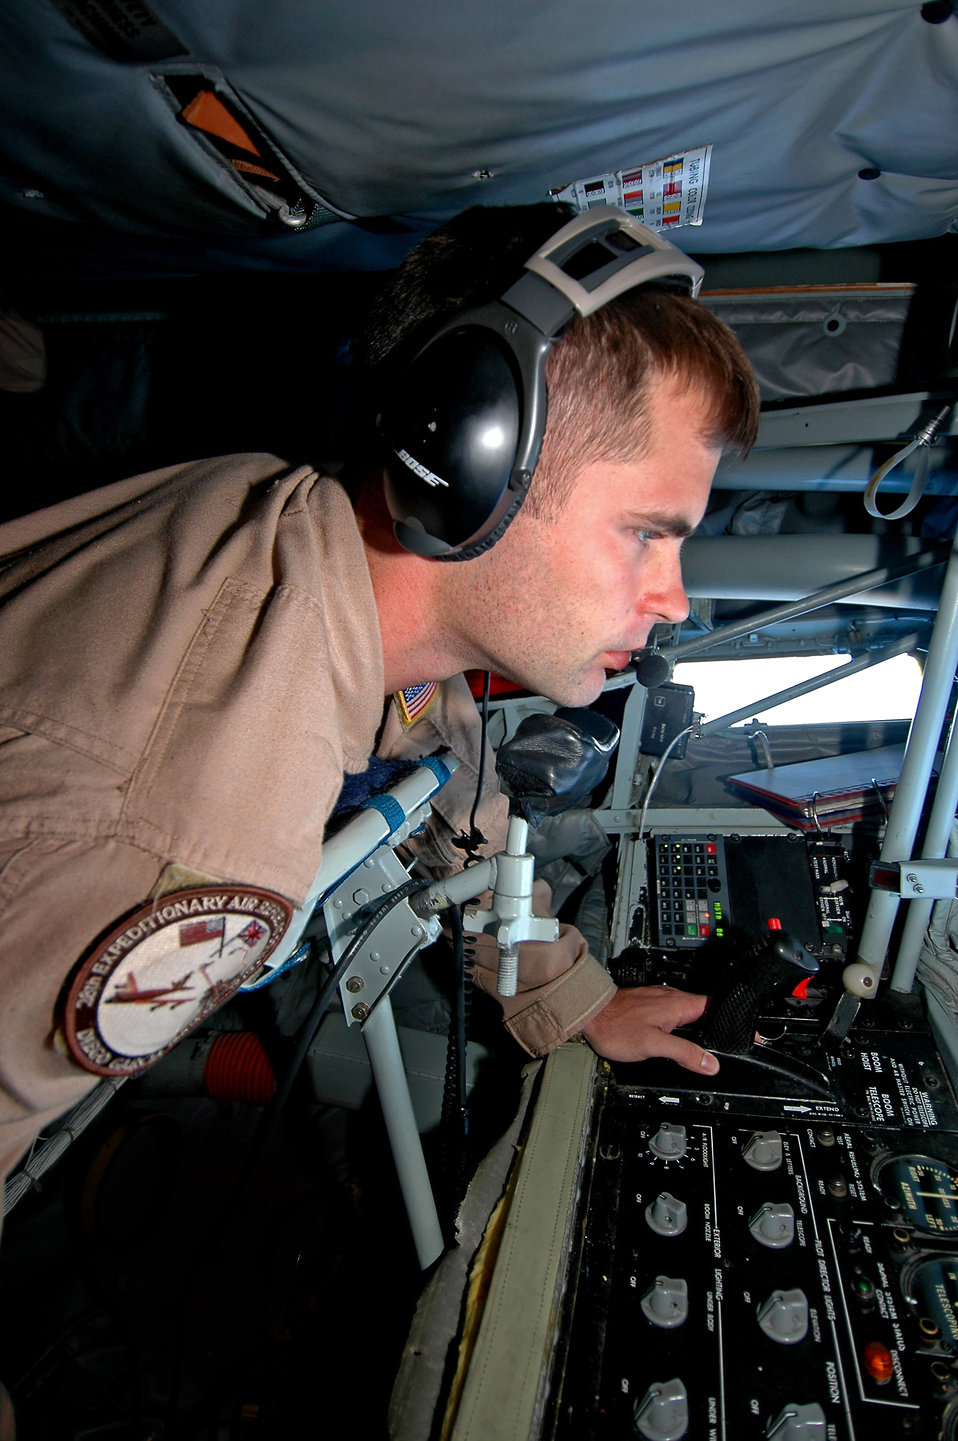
Fueling the fight

Airman 1st Class Ben Davis prepares to fuel a B-52 Stratofortress over the Indian Ocean. The B-52s provide close air support to troops on the ground in Afghanistan. Airman Davis is a boom operator with the 28th Expeditionary Air Refueling Squadron.